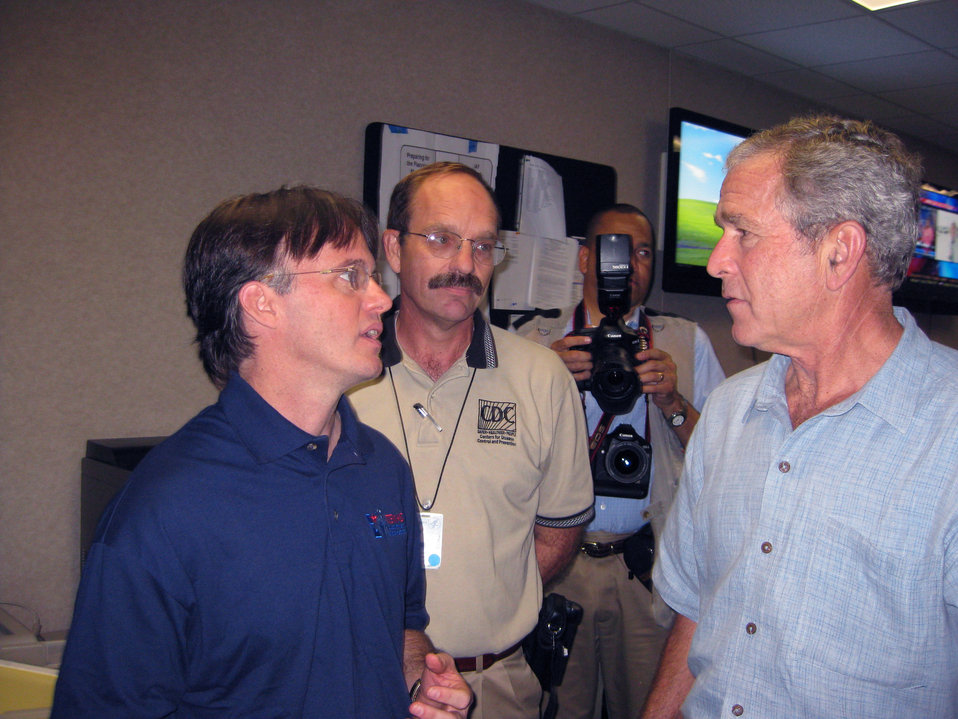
This photograph was captured on September 16, 2008, and depicts a moment during a visit made by former President George W. Bush to the Galveston, Texas City Hall Emergency Operations Center, three days after the landfall of hurricane Ike.